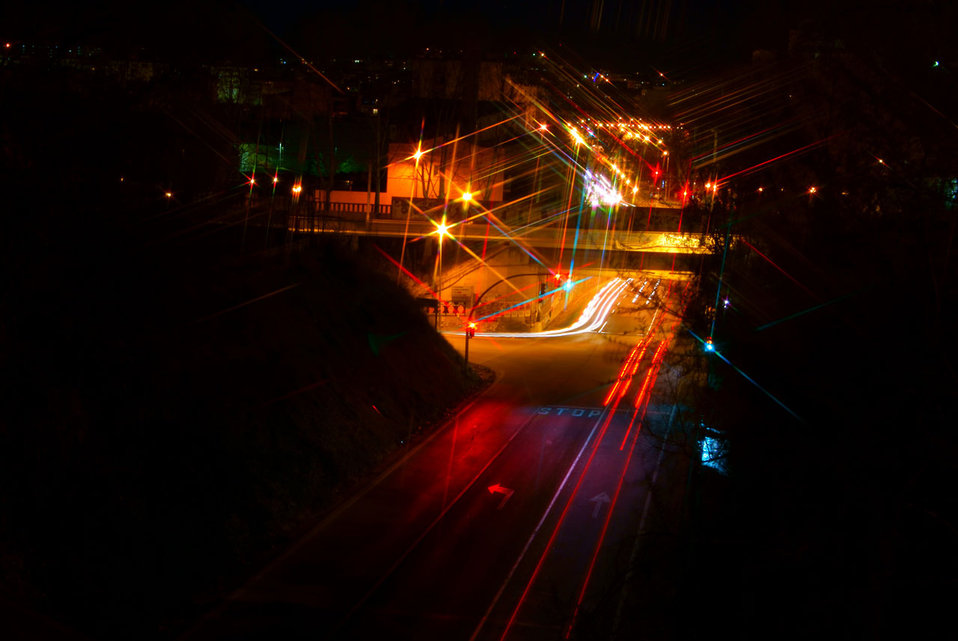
Light trails

Overnight in canovelles.